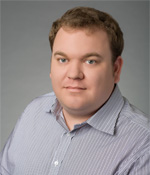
Dr. Michael Harvey, chief technical officer of XeroCoat Inc. The U.S. Department of Energy awarded XeroCoat Inc. a grant to develop a method for applying its patented anti-reflective coating technology directly onto assembled solar panels. “We may have had to push the timeline out to three years, and then there’s a very good chance we’d miss the market opportunities because we know other companies in China and Japan are trying to develop this — we now believe we have a head start instead of having to play catch-up.”